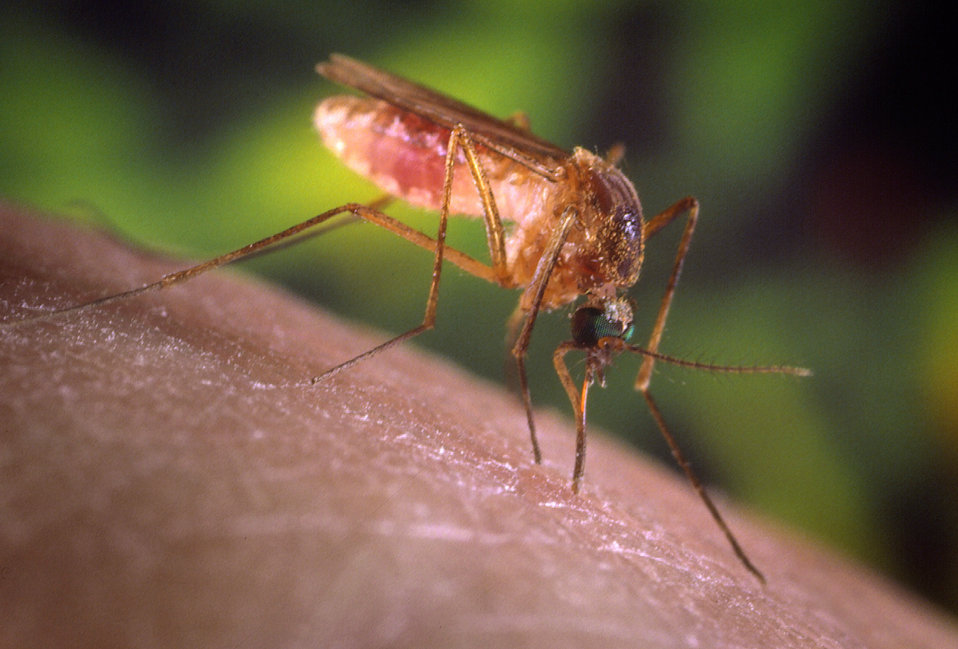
A Culex quinquefasciatus mosquito on a human finger.